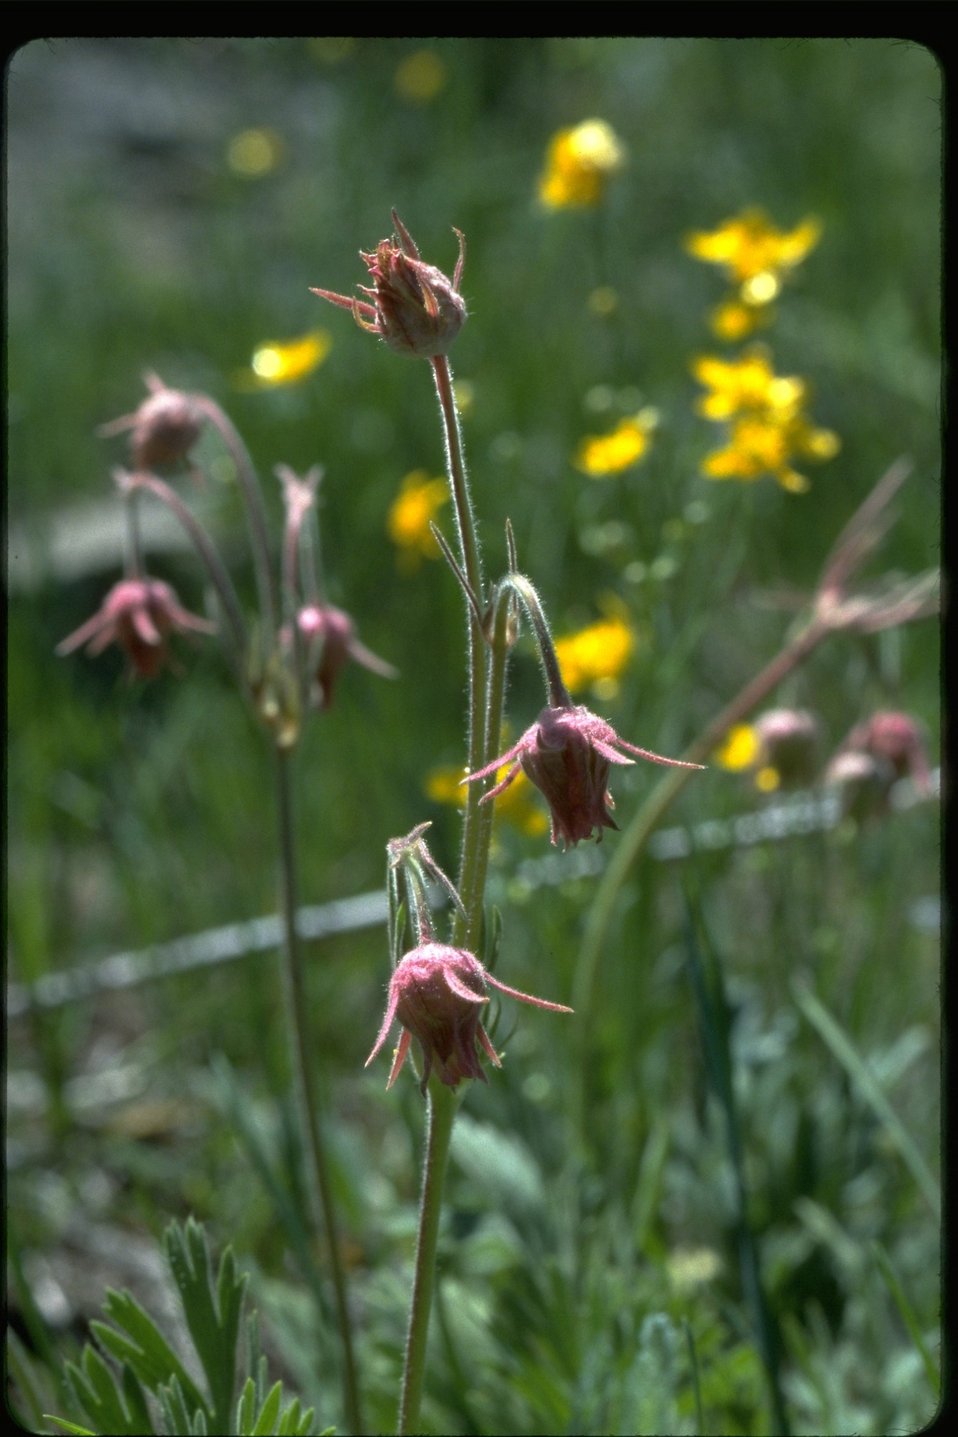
Prairie Smoke wildflowers in early stage.